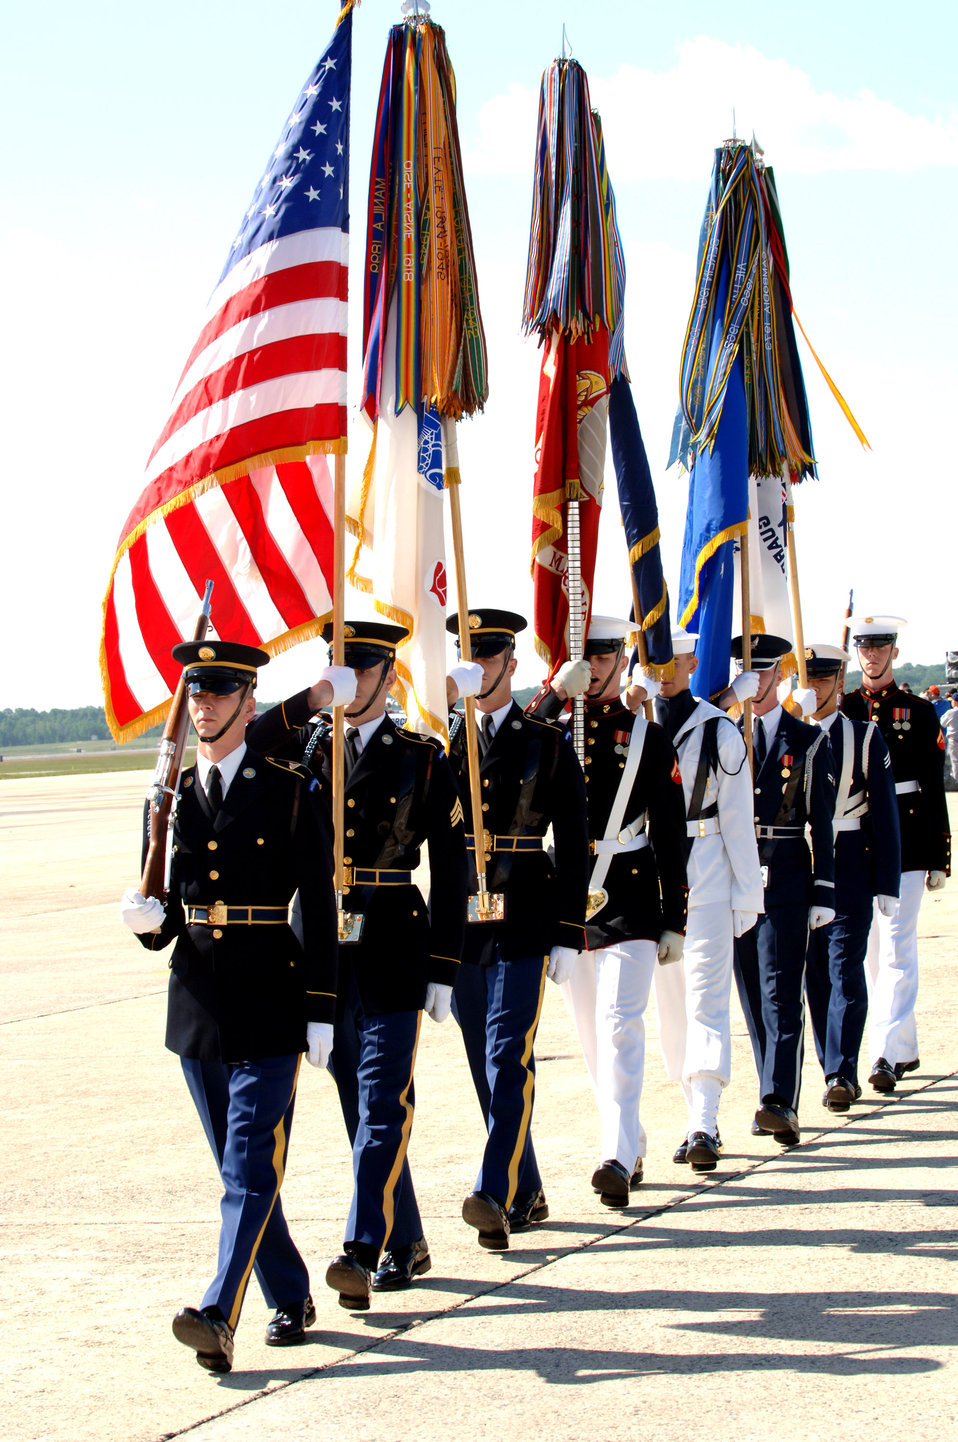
2006 Joint Service Open House

A joint service color guard prepares to post the United States and armed forces flags during the opening ceremony of the 56th annual Department of Defense 2006 Joint Service Open House at Andrews Air Force Base, Md., on Friday, May 19, 2006. The three-day event highlighted American aviators, aircraft and technology.